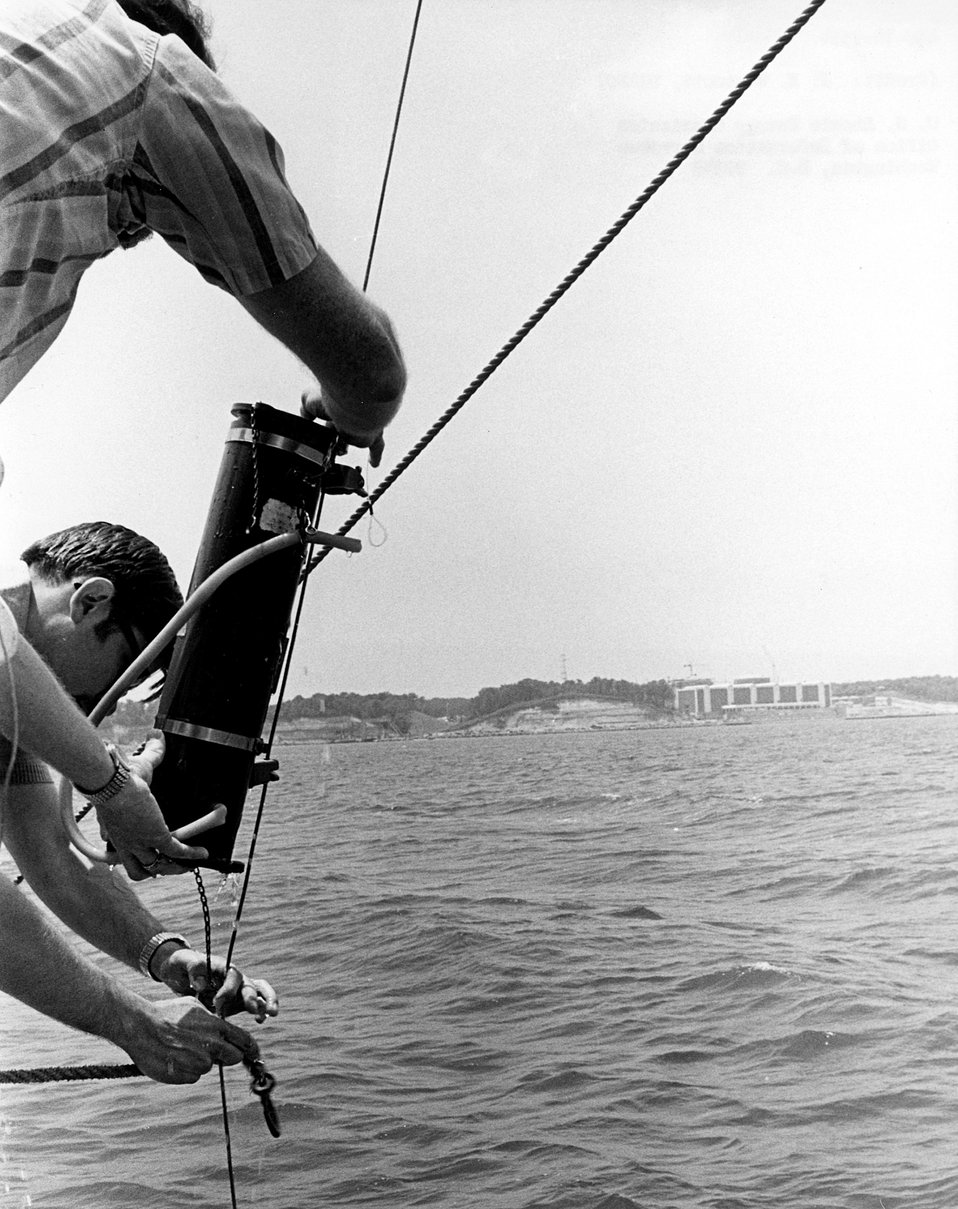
A research team from the Johns Hopkins University prepares to lower a Van Dorn water sampler from the research vessel Ridgely Warfield to test the composition of water in Chesapeake Bay. Circa 1972.